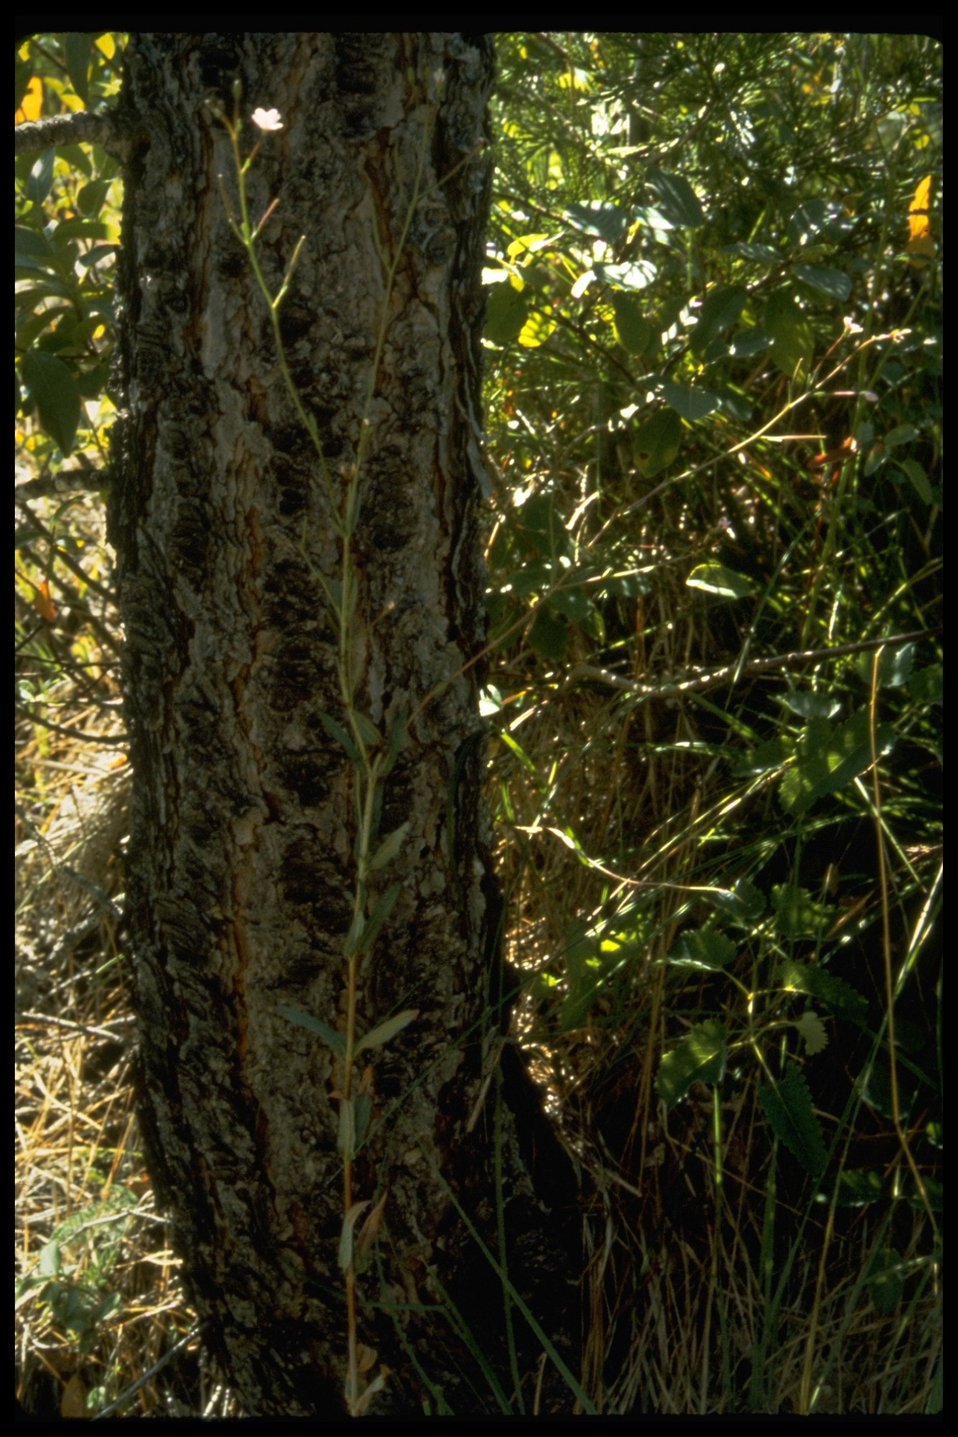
Farshot of Oregon willow-herb (Epilobium oreganum).